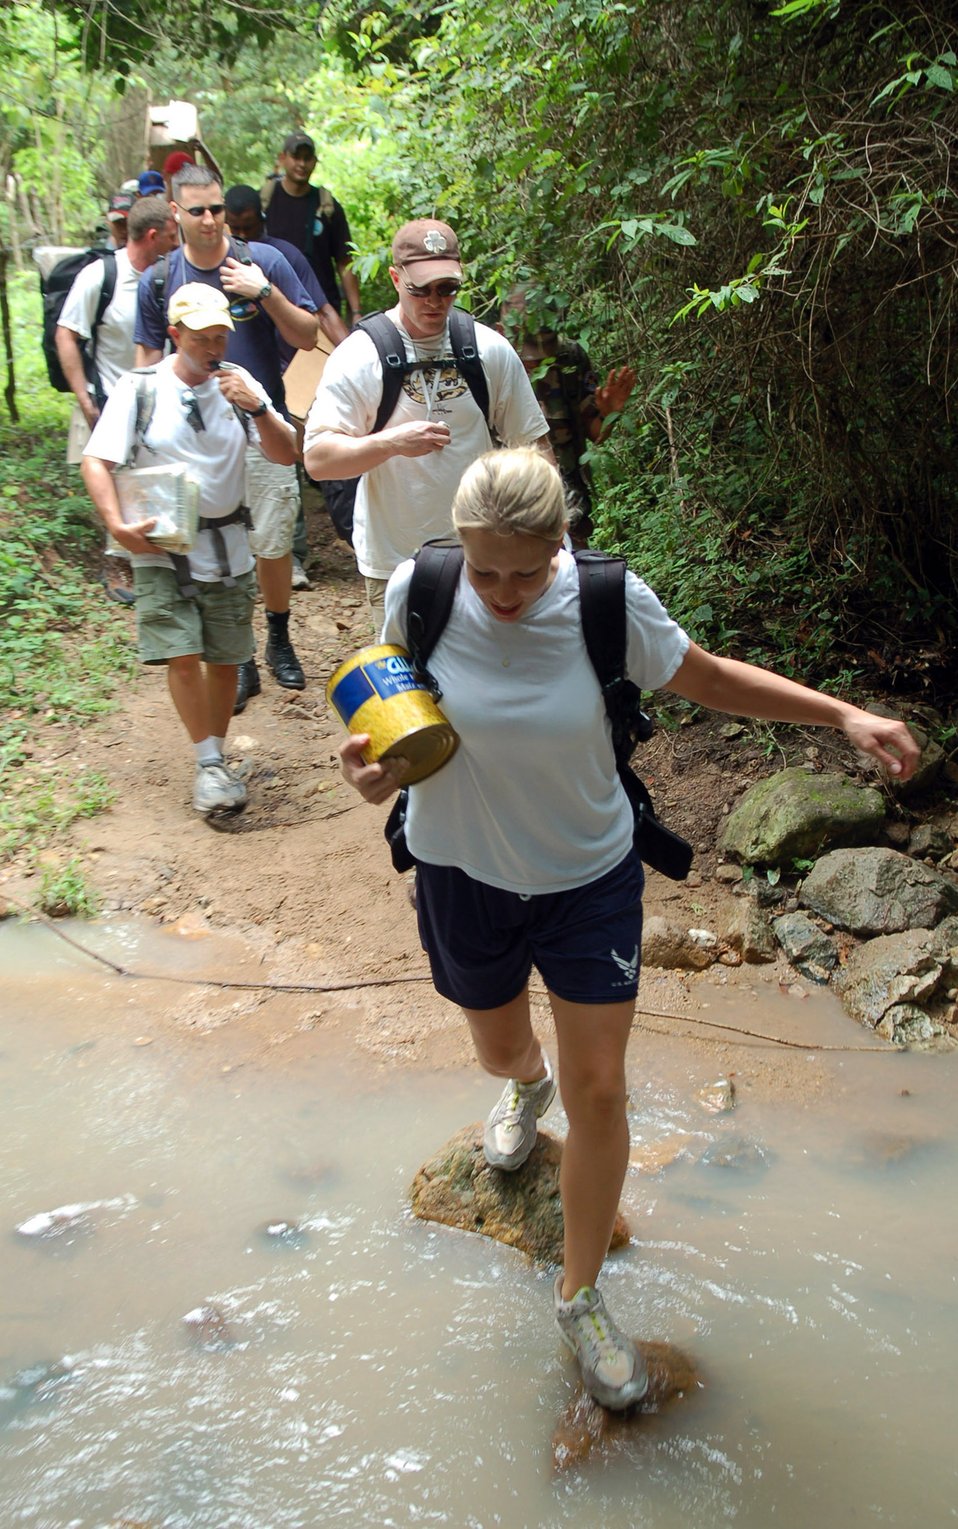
Servicemembers make mountain trek to deliver food

Staff Sgt. Melinda Atencio leads a group of military members across a stream during a hike to deliver food Sept. 29 to a village in the mountains near Comayagua, Honduras. The hike was sponsored by the Joint Task Force-Bravo Chapel from Soto Cano Air Base, and consisted of 55 volunteers who delivered approximately 450 pounds of supplies.